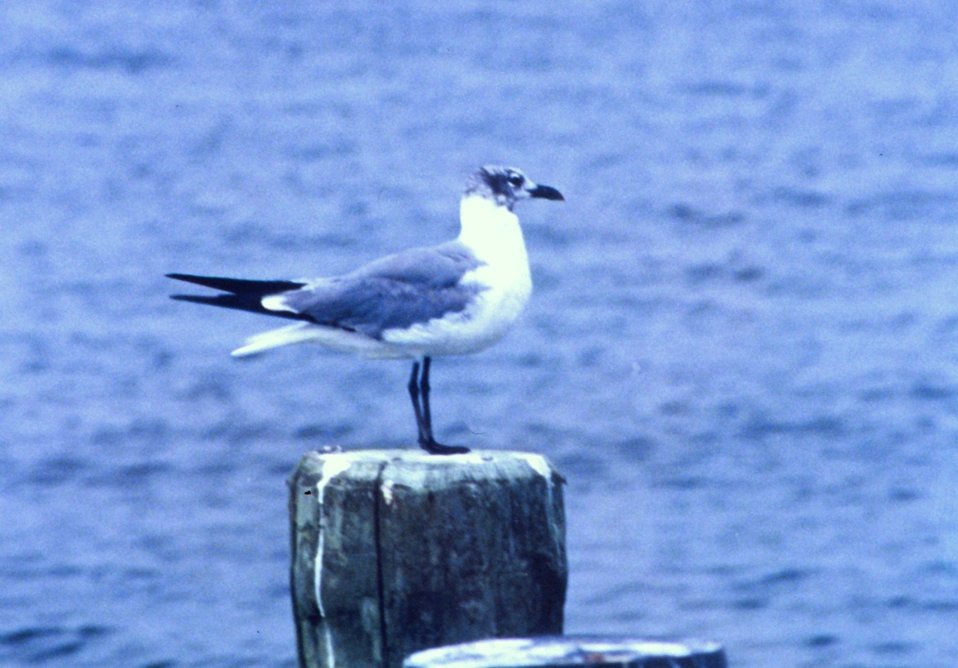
A Laughing Gull.